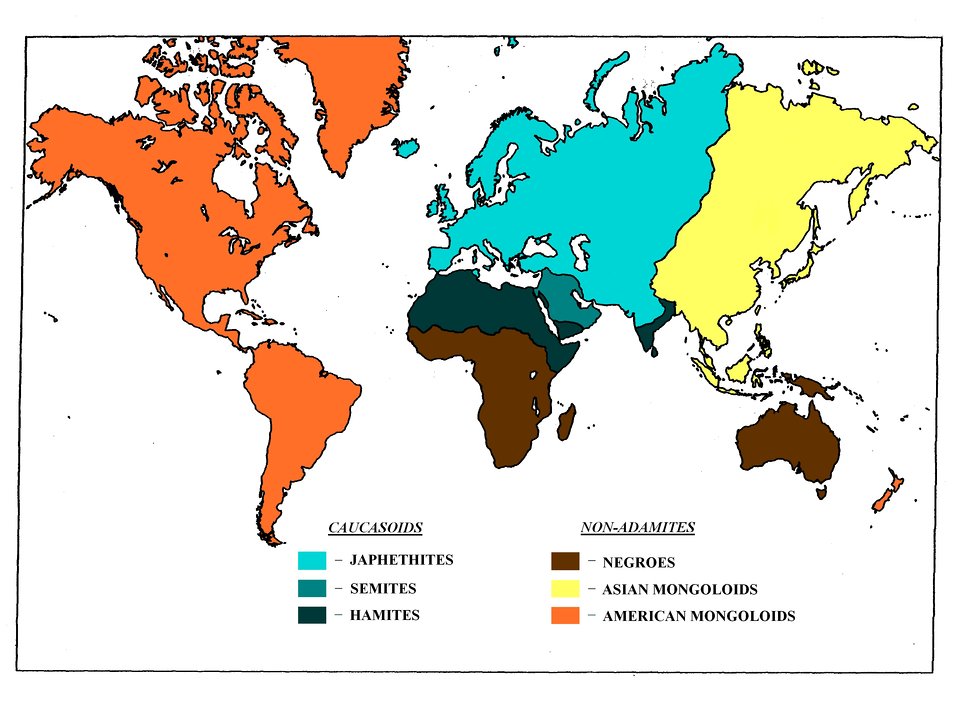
Nederlands: Wereldkaart met volkeren op basis van het polygenisme